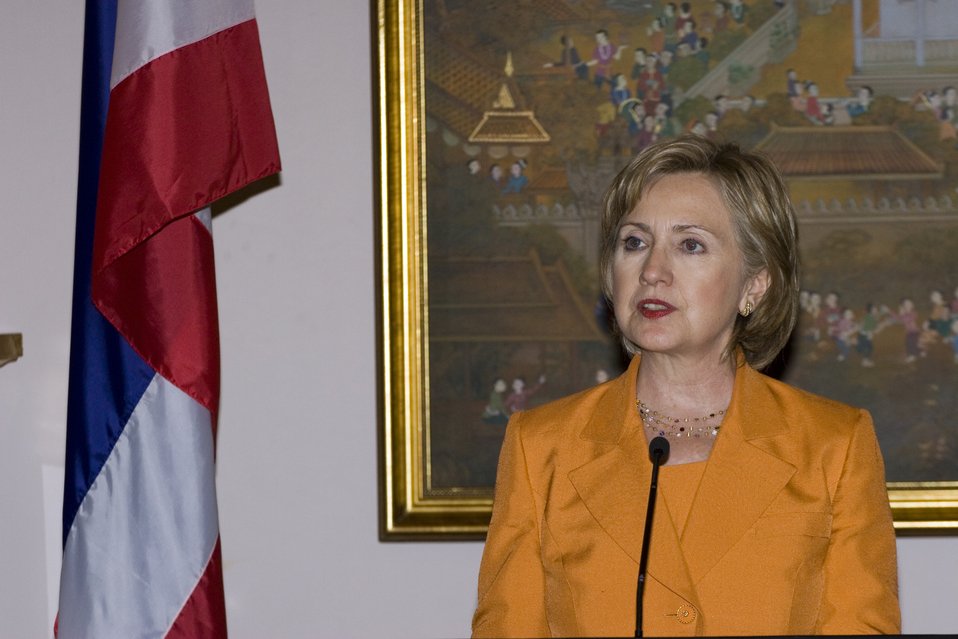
U.S.-Thailand Bilateral Meeting

U.S. Secretary of State Hillary Rodham Clinton answers questions from the press following the bilateral meeting at Government House in Bangkok, Thailand July 21, 2009.